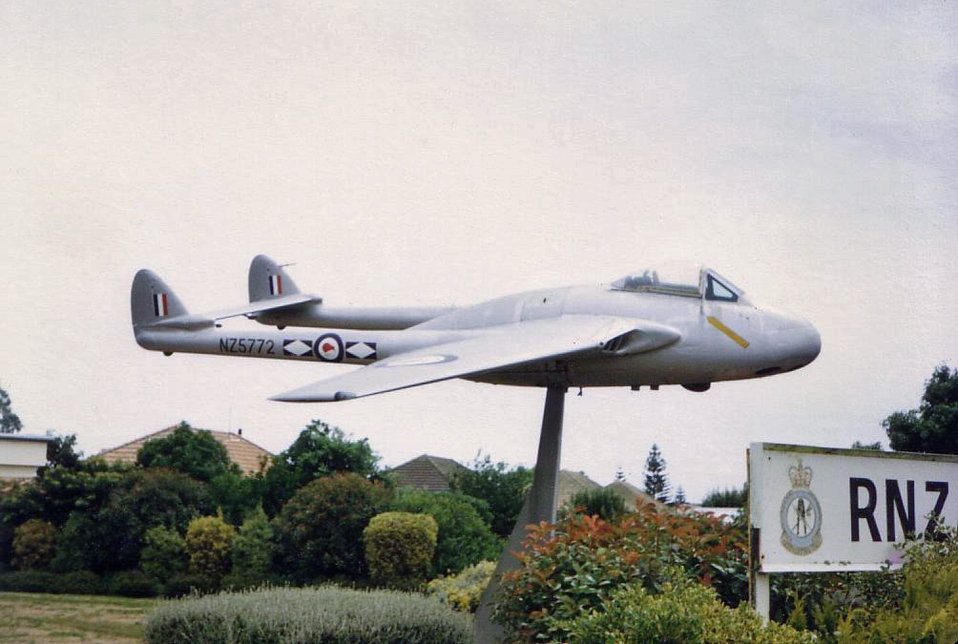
No. 14 Squadron RNZAF de Havilland Vampire gate guardian at Ohakea air base in the mid 1980s. It has been removed from this position and restored with a new GRP nose section and will feature in a new Aviation Centre planned for Ohakea in 2010.